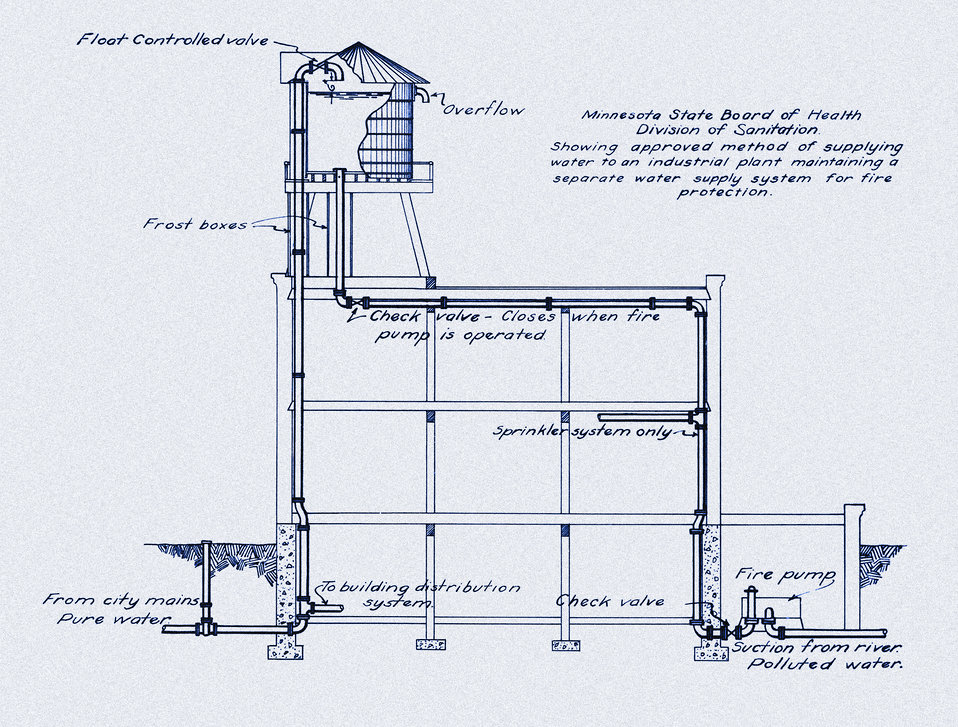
This historic 1919 diagram, which had been digitally enhanced and colorized, depicted a plan for providing a water supply intended for the purpose of fire protection. The diagram outlined a method for eliminating cross-contamination between the pure water of the city water main, and polluted river water.